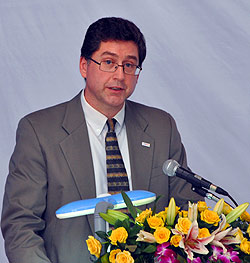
Co-pay Methadone Treatment Center Opens in Hai Phong on June 18, 2011